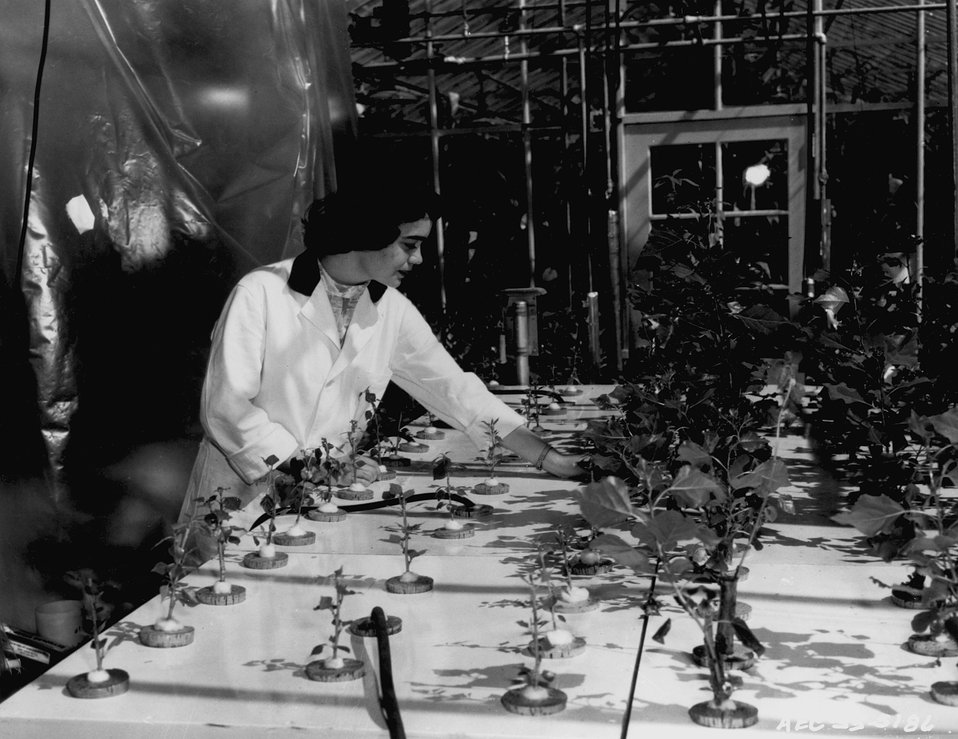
Before poplar trees are used in experiments in regeneration of new stems at Brookhaven National Laboratory, Upton, New York, the trees are grown under special care in the Biology Department greenhouse, c, 1955